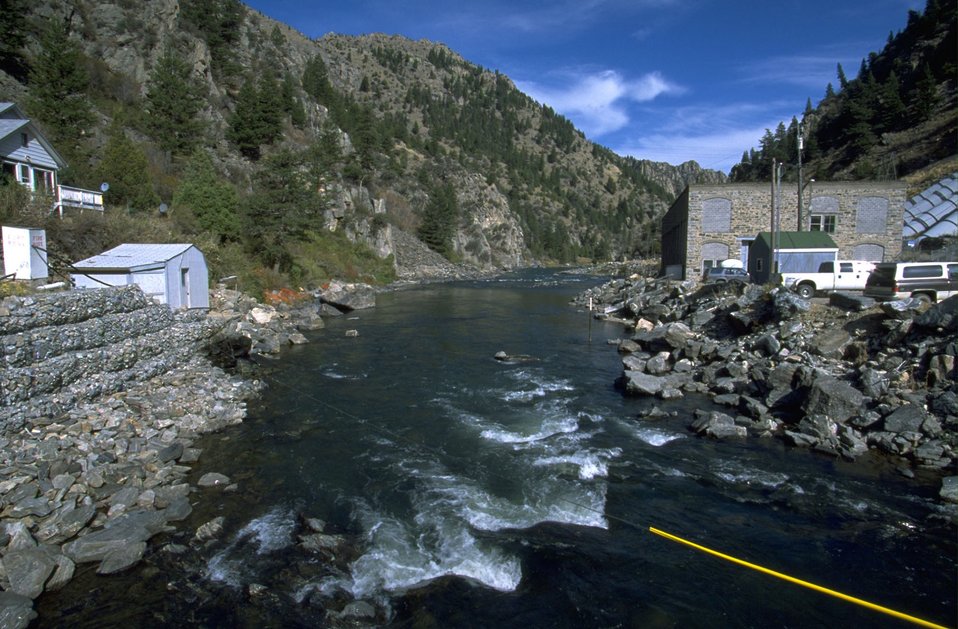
Power Plant looking downstream on Madison River